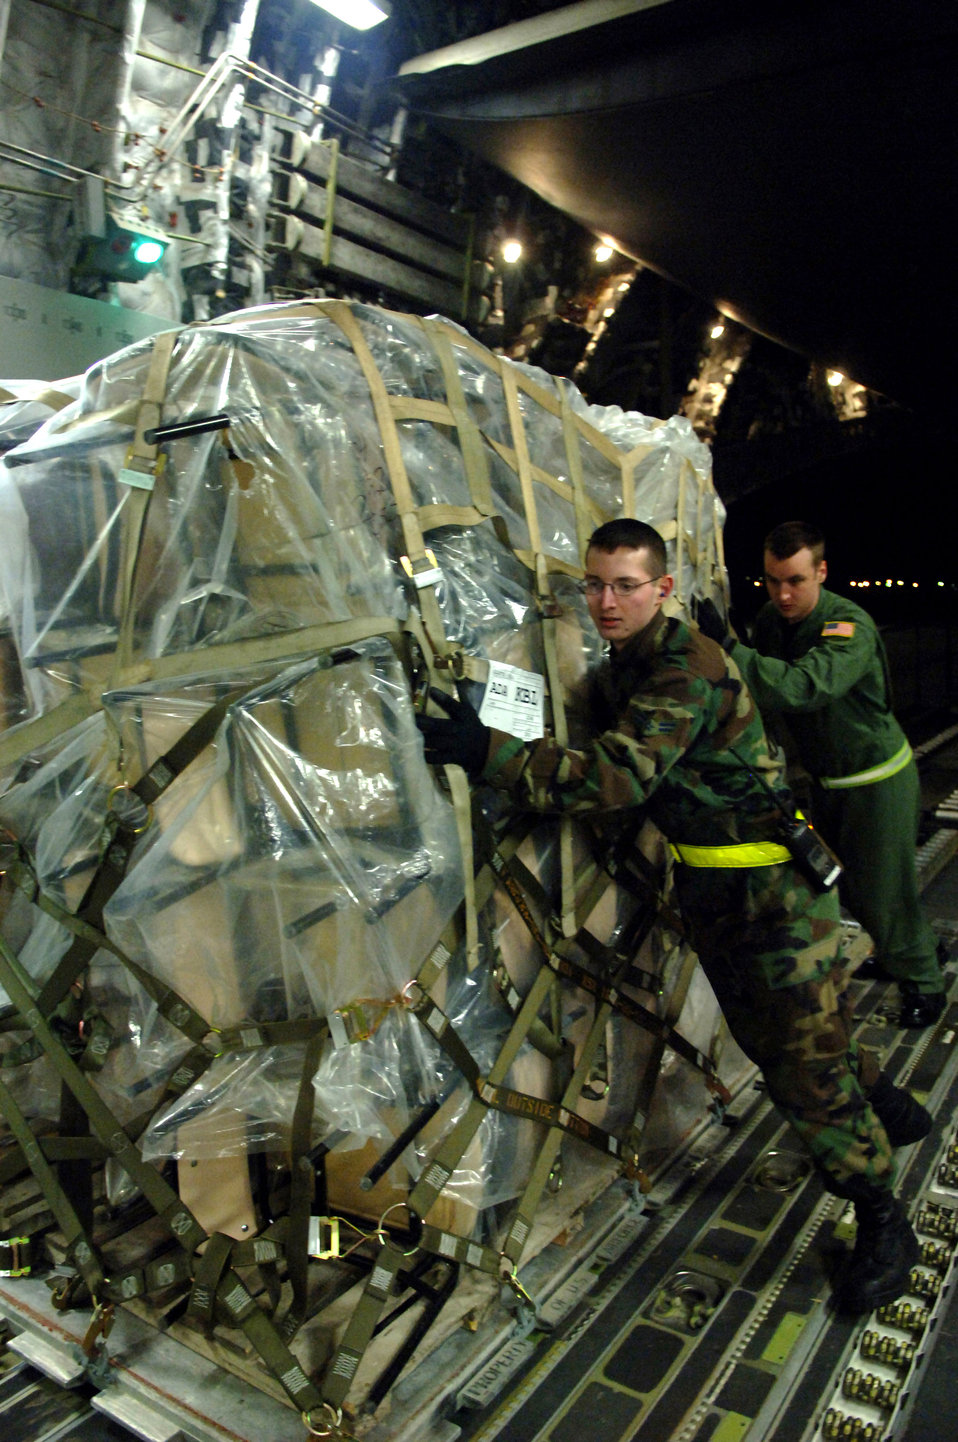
Turkish-U.S. airlift effort brings supplies to Afghan Army

Airman 1st Class Thomas Hickey and Senior Airman Ryan Yarton load cargo on a C-17 Globemaster III Feb. 20 on Incirlik Air Base, Turkey. Turkish and U.S. Air Forces' joint effort provided 94,000 pounds of supplies and equipment for the Afghan army to use in the war on terrorism. The Airmen are assigned to the 728th Air Mobility Squadron.